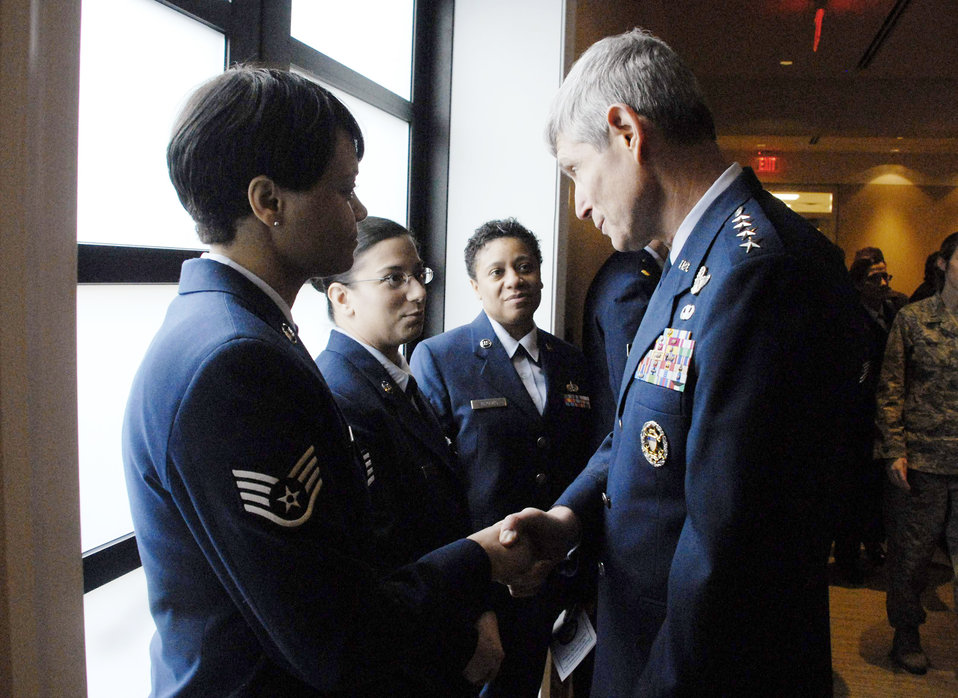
Chief of staff dedicates Center for Families of the Fallen

Air Force Chief of Staff Gen. Norton Schwartz meets with Staff Sgt. Tracey Taylor (left to right), Staff Sgt. Anjanette Harriston, and Staff Sgt. Carmel Brook following the dedication ceremony for the Center for Families of the Fallen Jan. 6, 2010, at Dover Air Force Base, Del. Sergeant Taylor, Harriston and Brook are assigned to the Air Force Mortuary Affairs Operations Center.